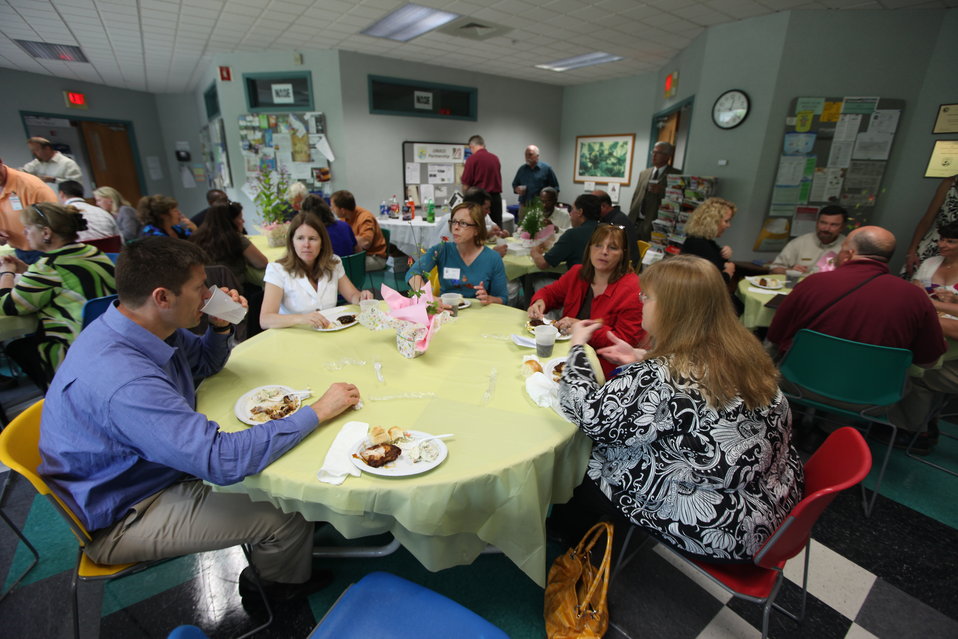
Northeast Region Employee Appreciation Awards

Luncheon